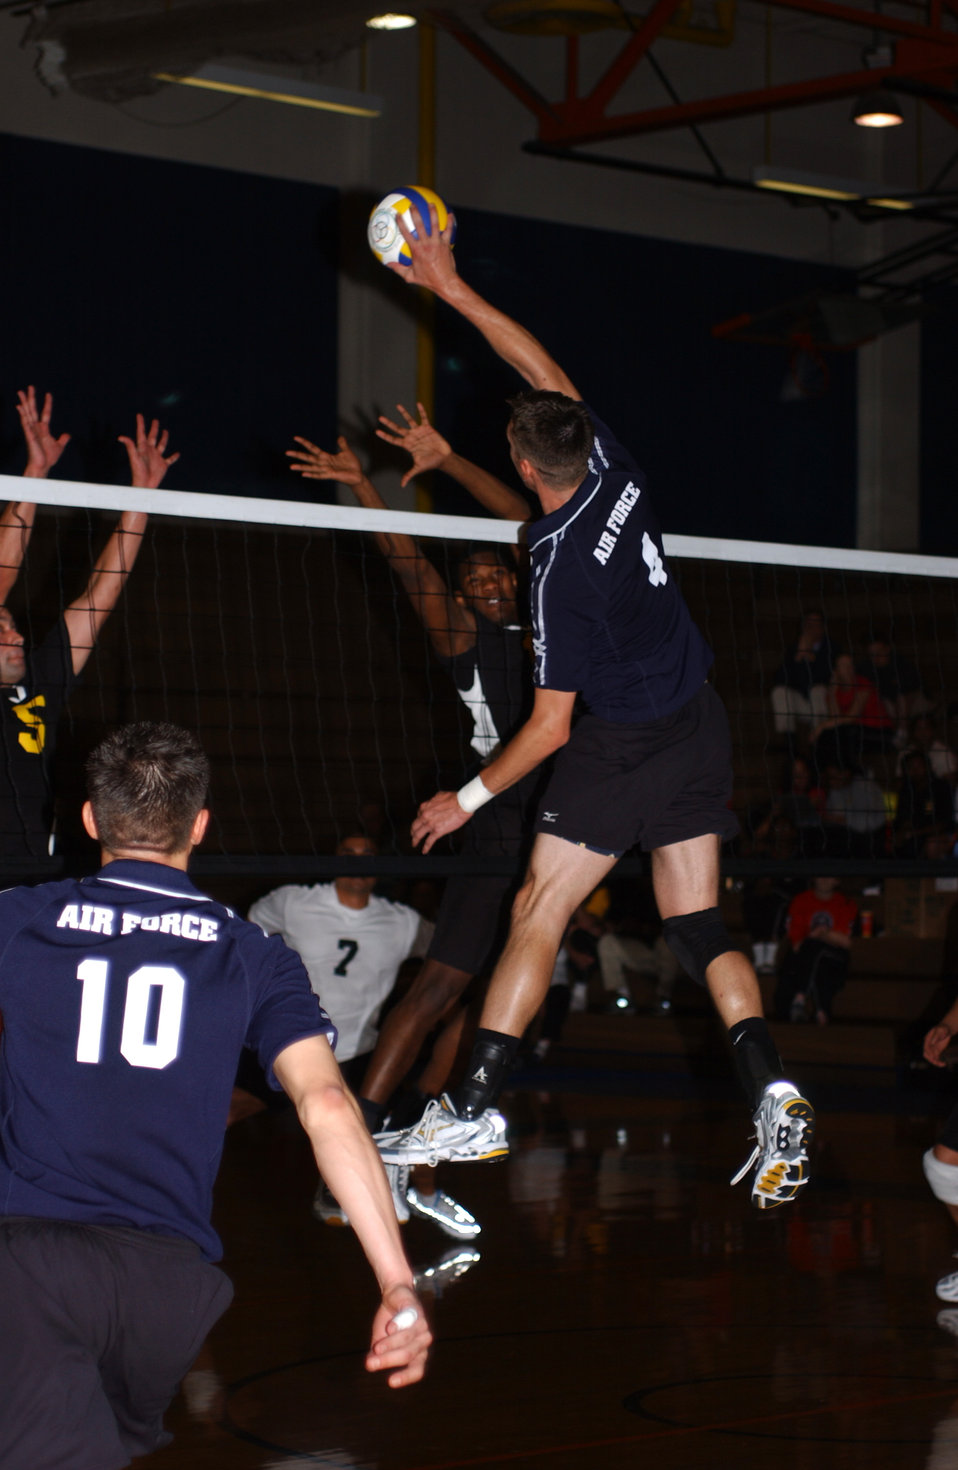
Jump

FORT LEWIS, Wash. - Staff Sgt. Jason McDonald tips the ball over Army blockers to throw off the defense. Sergeant McDonald was selected as one of the top 12 players at the 2004 All Armed Forces Volleyball Tournament held here June 22. The 12 best players selected from all four services will represent the U.S. military at the International Military Sports Council World Championship and face their counterparts from other nations. Sergeant McDonald is assigned to Dyess Air Force Base, Texas.